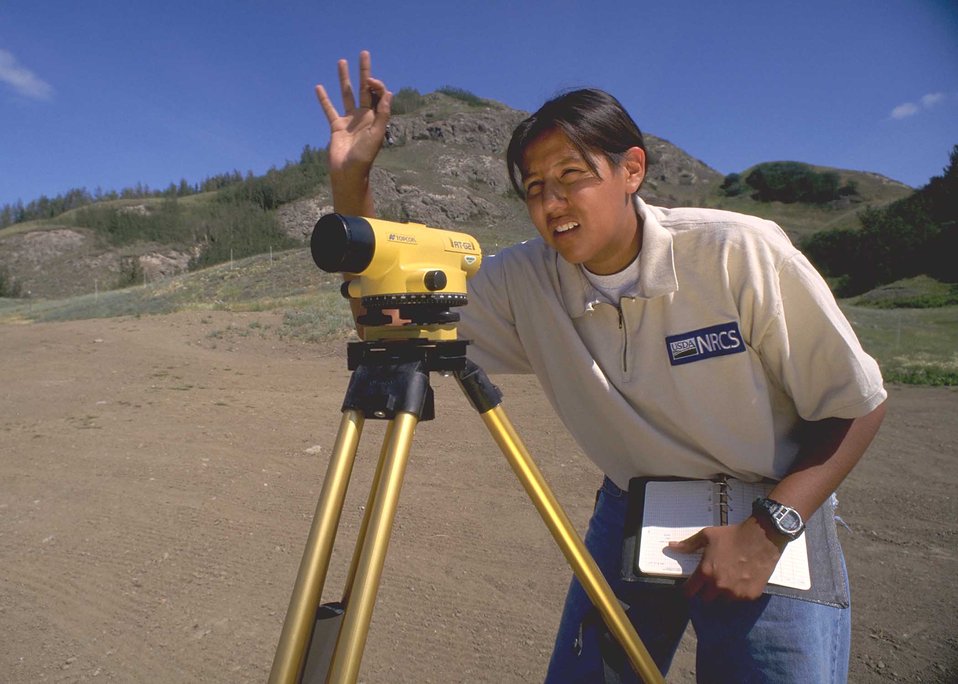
Kristine Harper, NRCS summer employee surveys pond site near Palmer, AK.